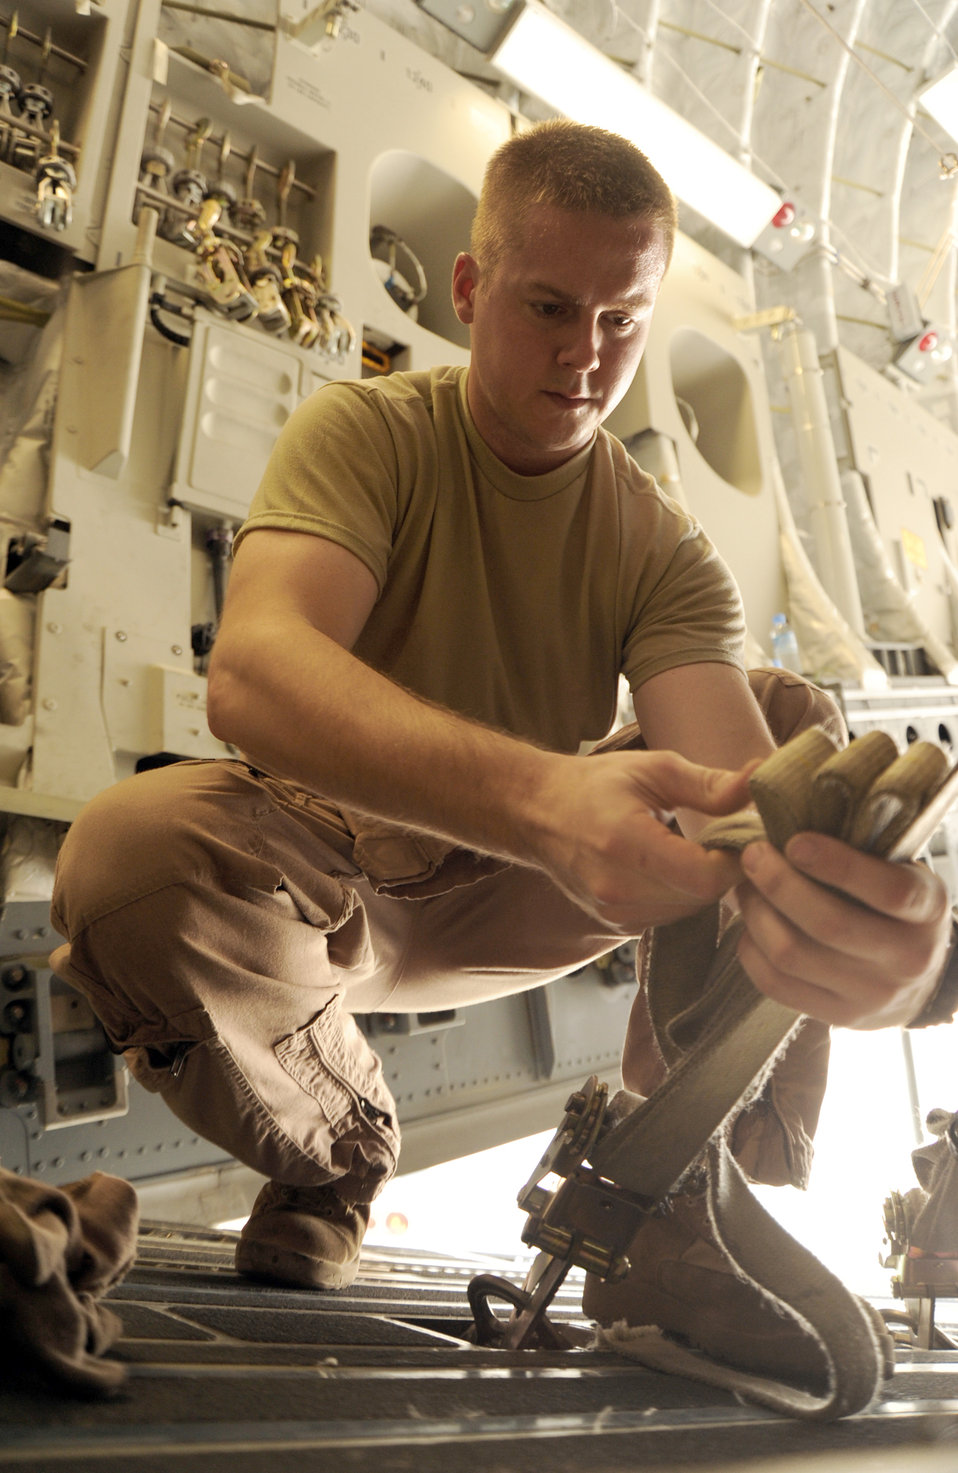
Operation Everest

Staff Sgt. Gary West secures cargo straps in a C-17 Globemaster III Aug. 13, 2010, at an air base in Southwest Asia. The drop was part of Operation Everest, a week-long effort to exercise the C-17 theater airdrop capability. Sergeant West is an instructor airdrop loadmaster with the 817th Expeditionary Airlift Squadron.